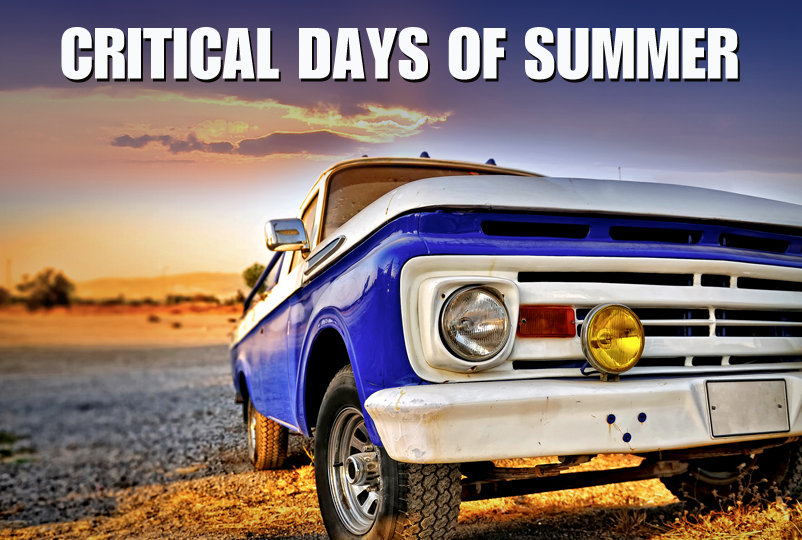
Critical Days of Summer